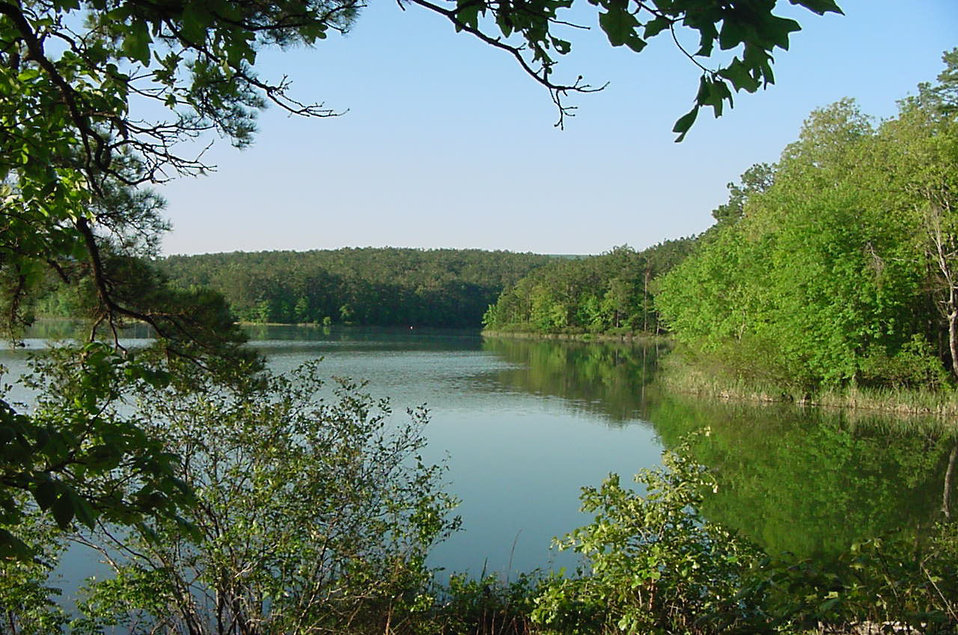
Stelprdb5158923

U.S. Forest Service planning teams must complete rapid assessments of ecosystem conditions on national forests and the effects on those ecosystems (such as this one at Cedar Lake) from stressors, such as climate change.